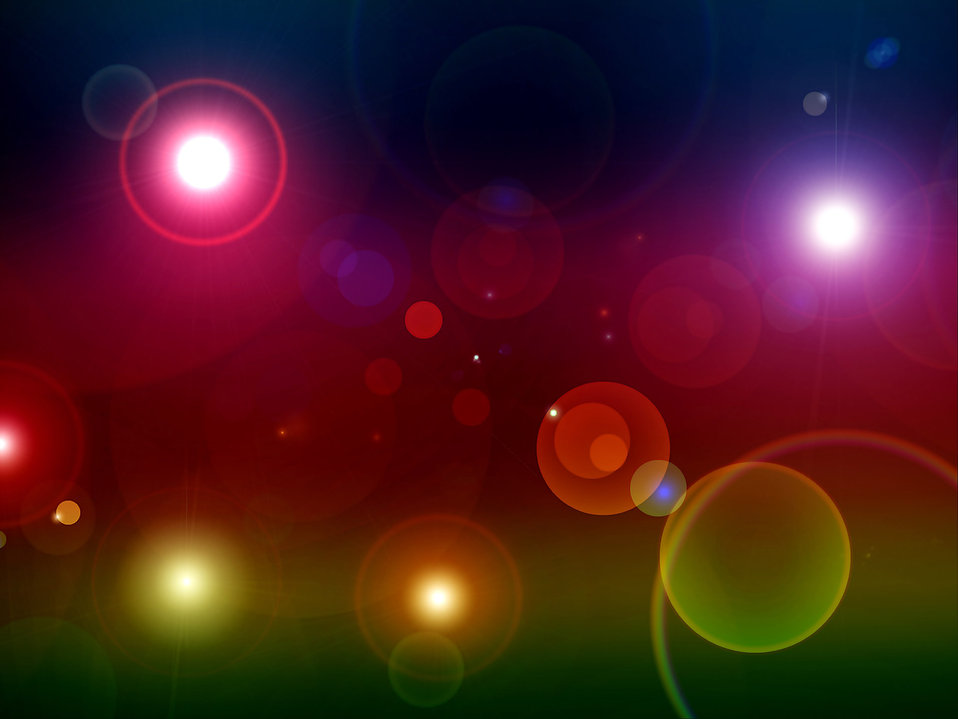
Background 328

Background.